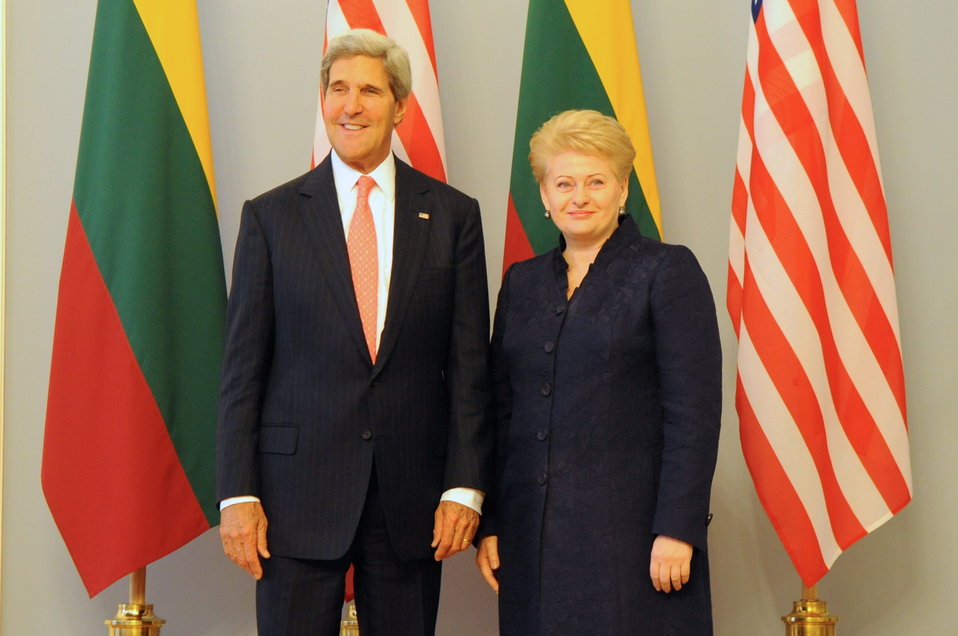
Secretary Kerry Meets With Lithuanian President Dalia Grybauskaitė

U.S. Secretary of State John Kerry meets with Lithuanian President Dalia Grybauskaitė in Vilnius, Lithuania, on September 7, 2013.